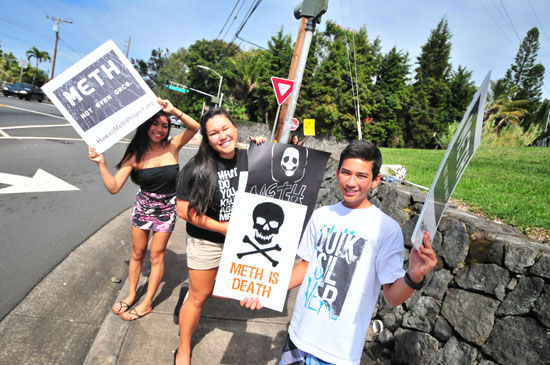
Hawaii Meth Project, NDFW 2013

Konawaena, Hawaii. In conjunction with National Drug Facts Week (Jan. 28-Feb. 3), the Hawaii Meth Project and it’s Teen Advisory Council member Mahealani Yoshida hosted “Blackout Meth Day” on Wednesday, Jan. 30 at Konawaena High School to raise awareness about the “Not Even Once” message.